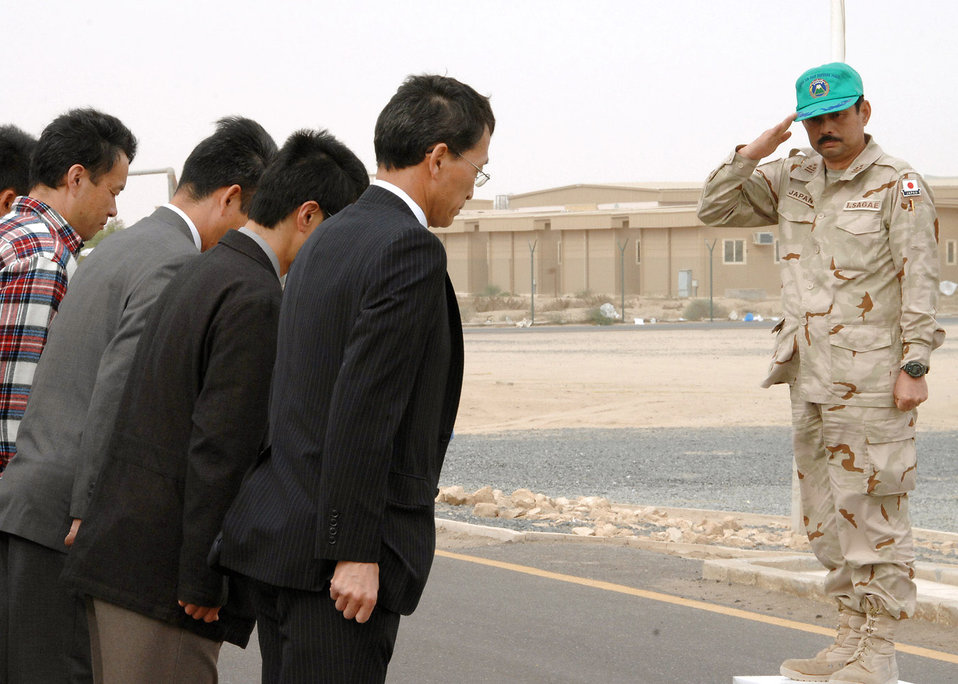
JASDF Redeplyoyment Group bids final farewell

Japanese Air Self Defense Force Col. Isami Sagae renders a salute to the members of JASDF before they depart for Japan at an air base in Southwest Asia Feb. 10. After the JASDF mission was complete, more than 100 members remained behind to restore the facilities they used and to ship equipment back to Japan.